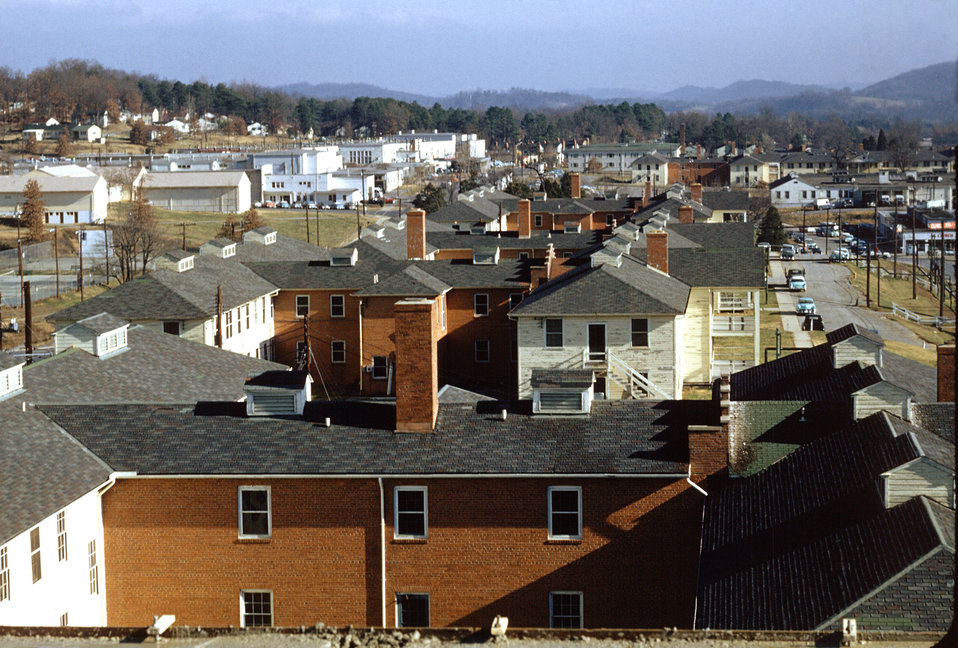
Roof Tops City of Oak Ridge

DOE photo by Ed Westcott
Roof Tops, City of Oak Ridge Tennessee